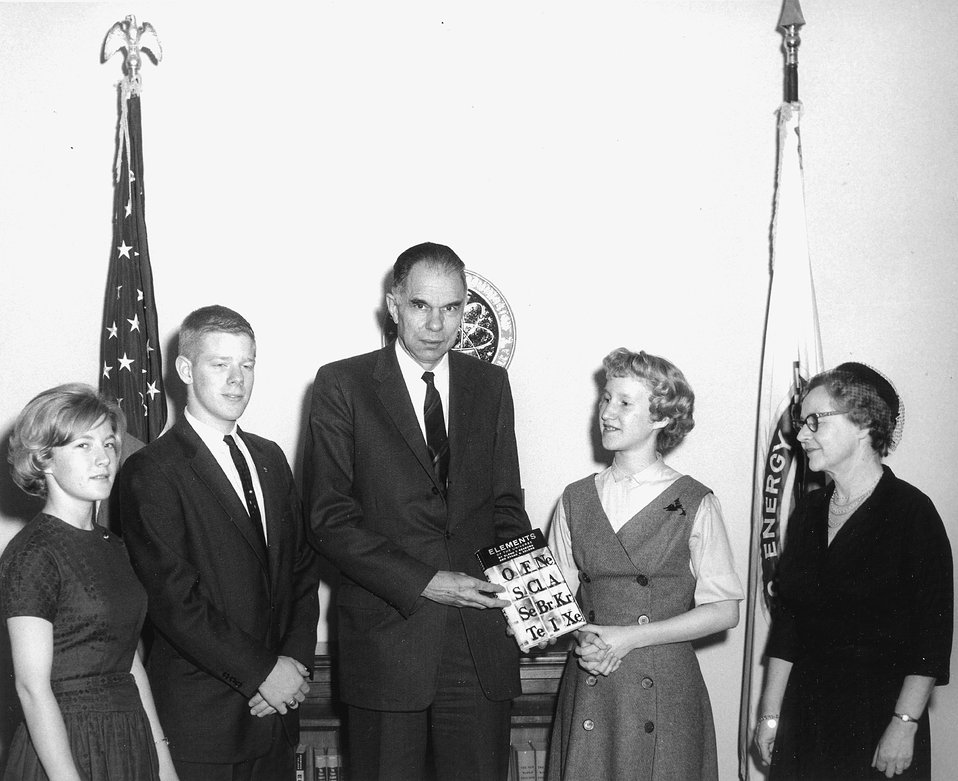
L. to R.: Sandra Lewis, Bruce Vermeulen, Dr. Seaborg, Trudy Noller, and Mrs Robert H. Miller (Chaperone) - Winners of Berkeley Awards Appreciation of Excellence in Youth. c. 1962